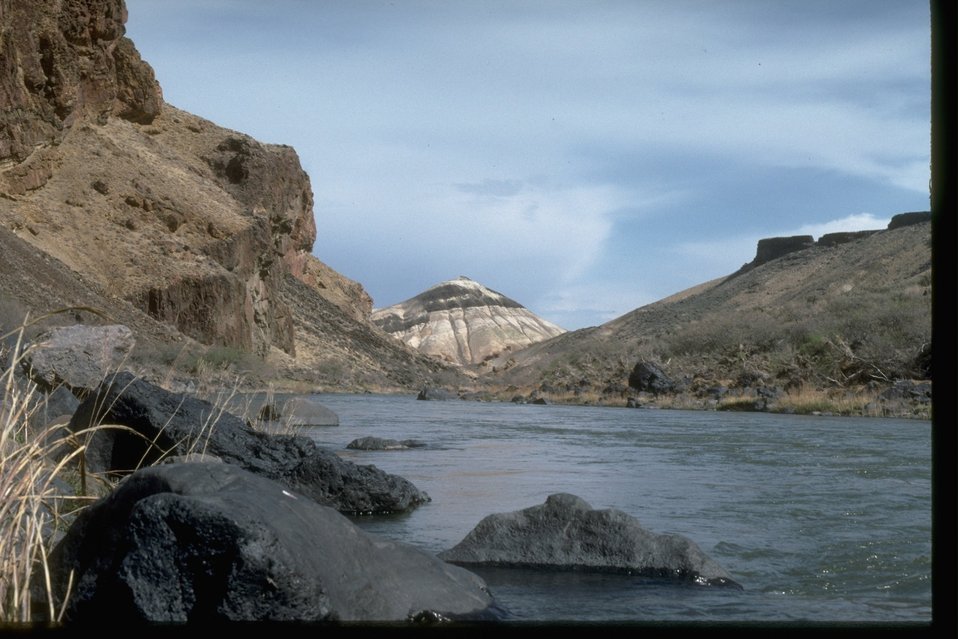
Approaching Pot Hole Arch. OR 3-59